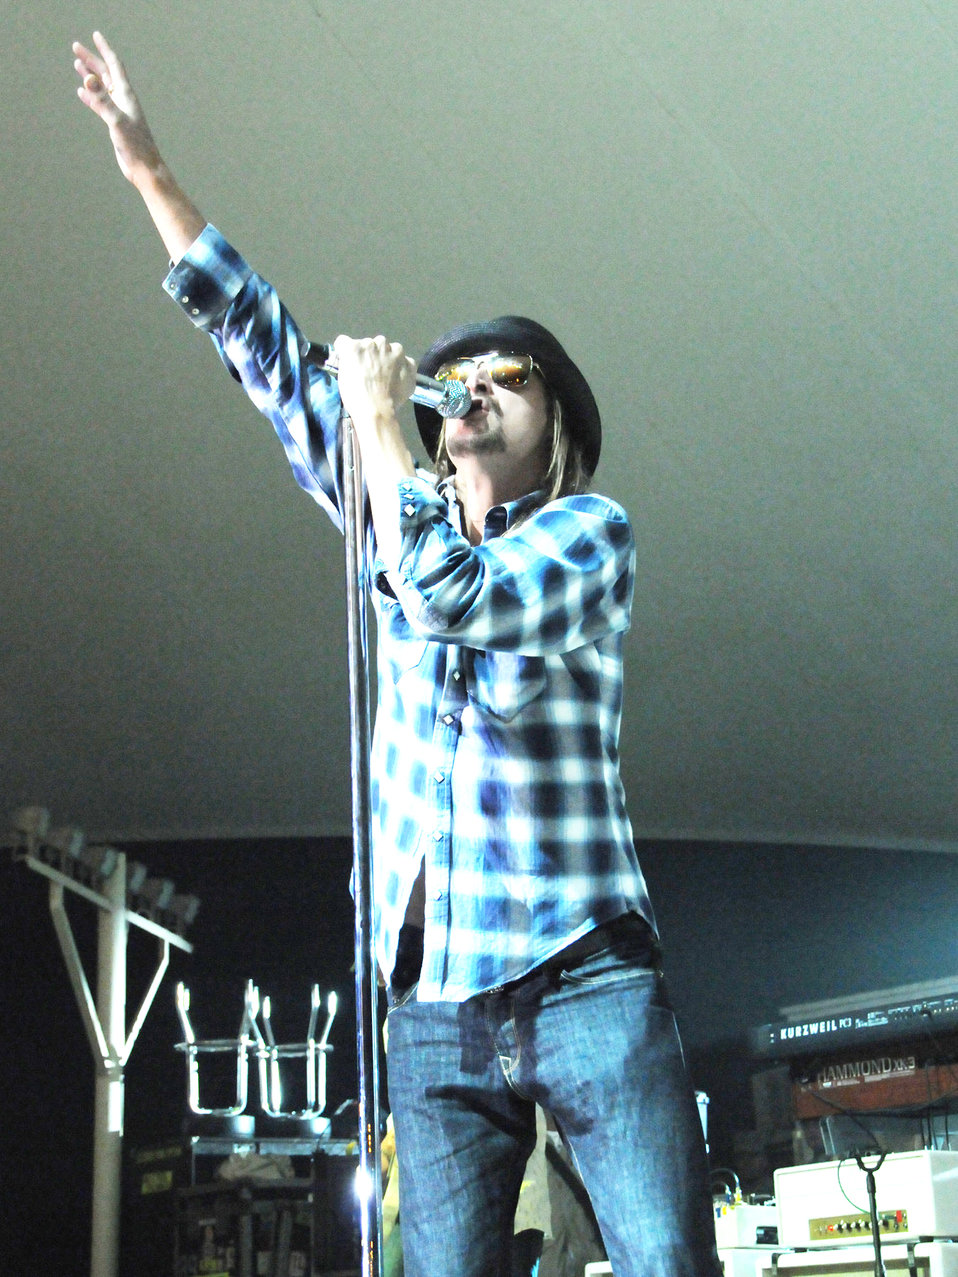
Entertainers put on a show for troops in Southwest Asia

Kid Rock performs for a live audience of deployed servicemembers Dec. 6, 2009 at an airbase in Southwest Asia. Tour for Troops 2009 will visit various deployed locations throughout Southwest Asia and Europe and is sponsored by the Air Force Reserve Command.